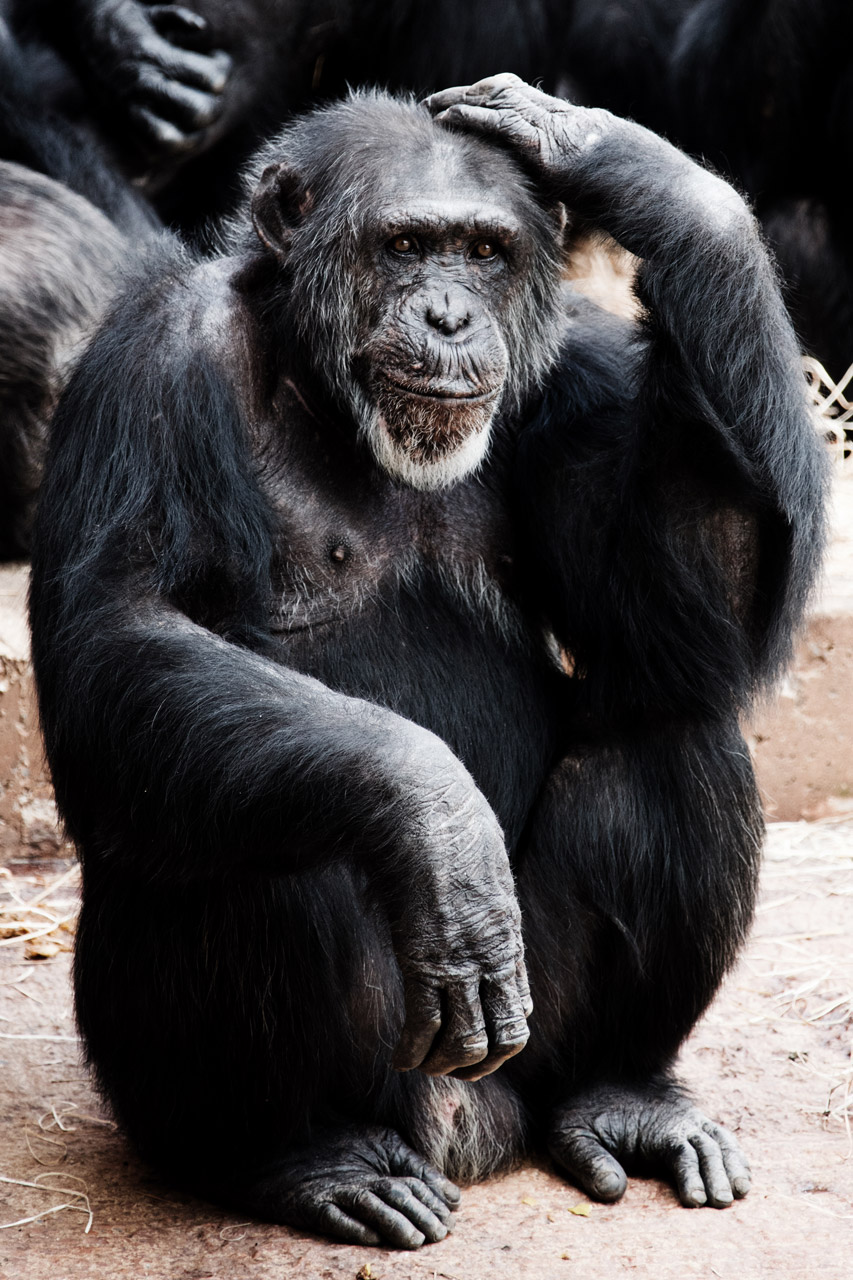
Chimpanzee thinking

An old chimpanzee thinking.